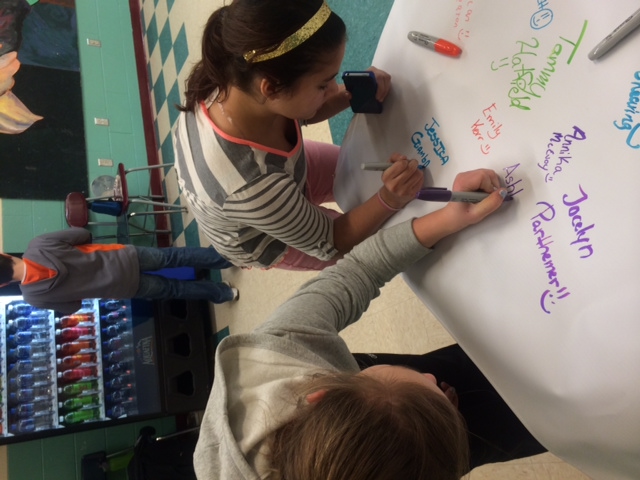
CASA of Livingston County